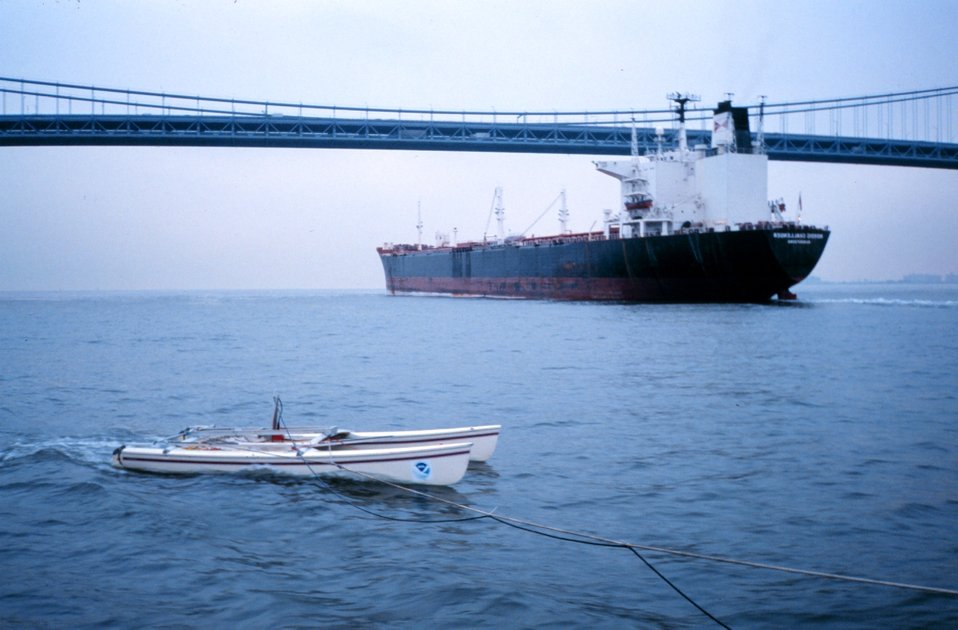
An outbound ship passes under Verrazano Narrows Bridge as a NOAA modified catamaran takes mobile current profiles with an acoustic data collection platform (ADCP).